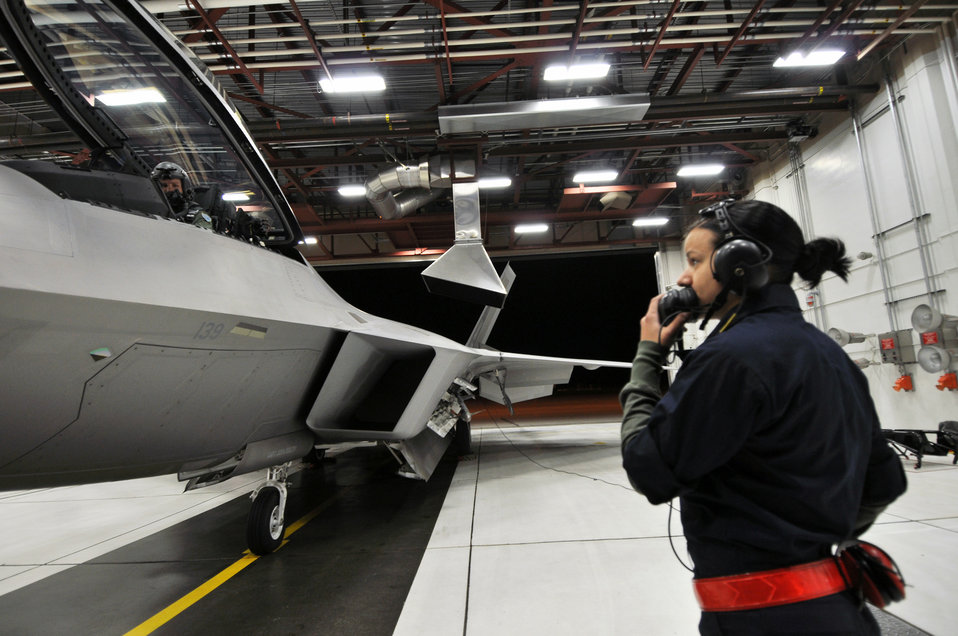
Squadron tests F22s

Airman 1st Class Jennifer Craig (left) and Australian Maj. Matthew Harper prepare an F-22 Raptor for departure to Tyndall Air Force Base, Fla., Oct. 30, 2010, from Joint Base Elmendorf-Richardson, Alaska. Airman Craig is assigned to the 90th Aircraft Maintenance Unit and Major Harper is a 90th Fighter Squadron pilot.